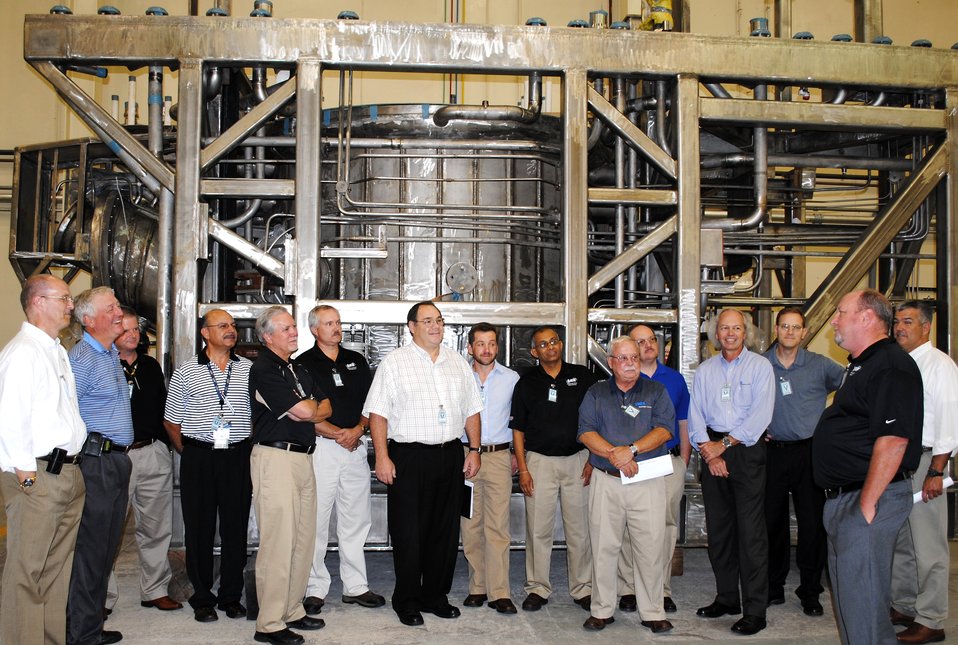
DWPF Melter 4 Vessel, Frame Arrive Ahead of Schedule

SRR DWPF Project Team Manager Brian Geyer (right) briefs DOE and SRR officials on melter 4. The entire vessel and frame is approximately 21 feet long, 11 feet wide with a height of approximately 13 feet. The entire completed assembly weighs approximately 65 tons when empty and holds approximately seven tons of glass when full. The melter processes glass at approximately 225 pounds per hour, filling approximately one 10-foot long, two-foot wide canister per day.